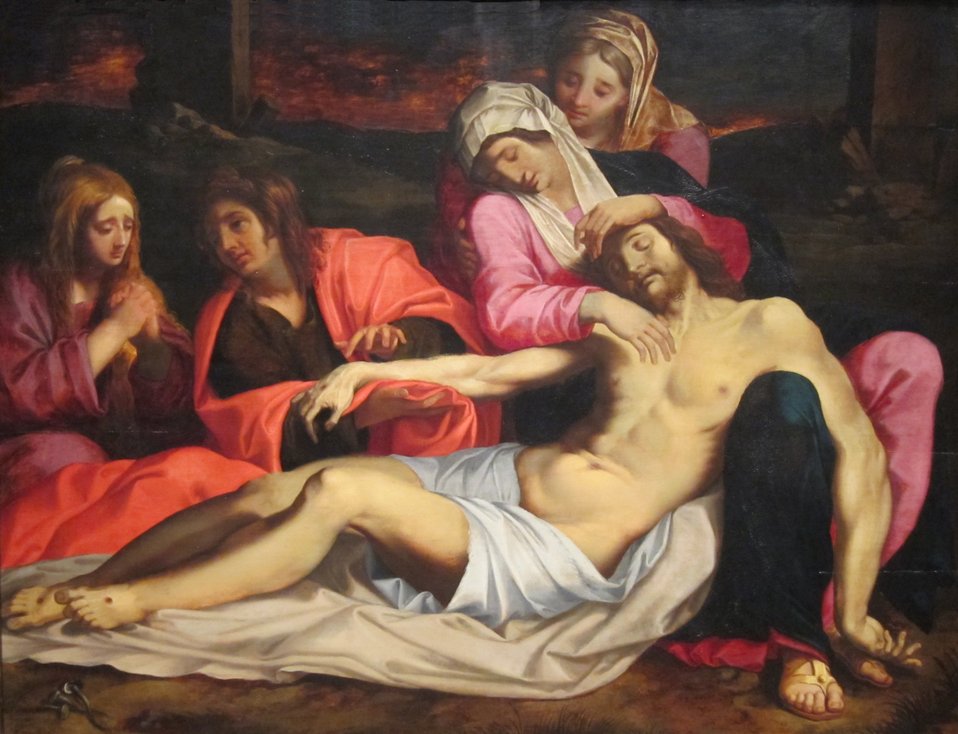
The Lamentation of Christ, oil on wood panel painting by Abraham Janssen van Nuyssen, 1660-1604, Dayton Art Institute